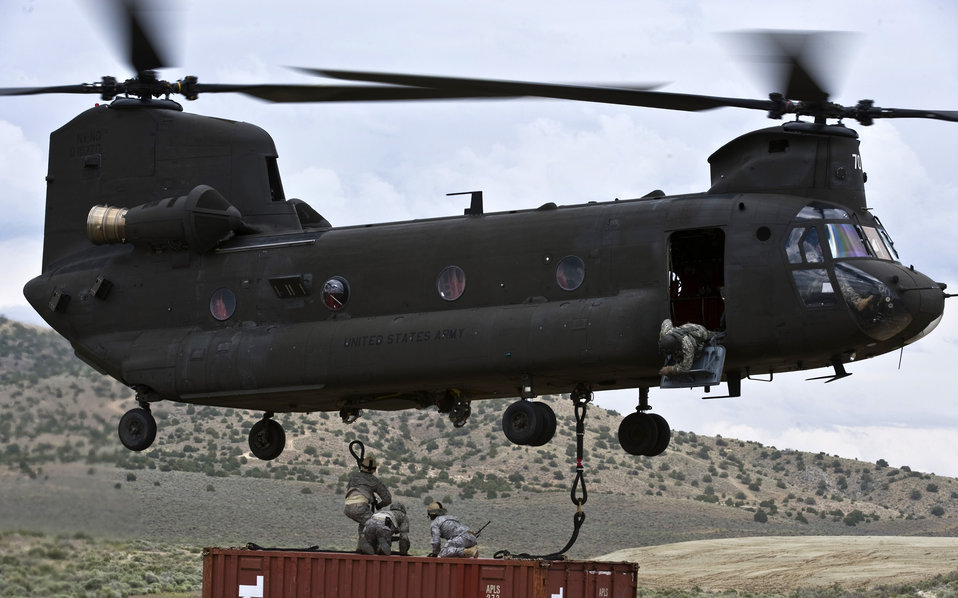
Airdrop and sling-load training

Members of the 820th RED HORSE squadron attach a storage container to a Nevada Army National Guard CH-47 Chinook helicopter June 28, 2011, during airdrop and sling-load training at the Senator Harry Reid Readiness and Training Center near Stead, Nev.